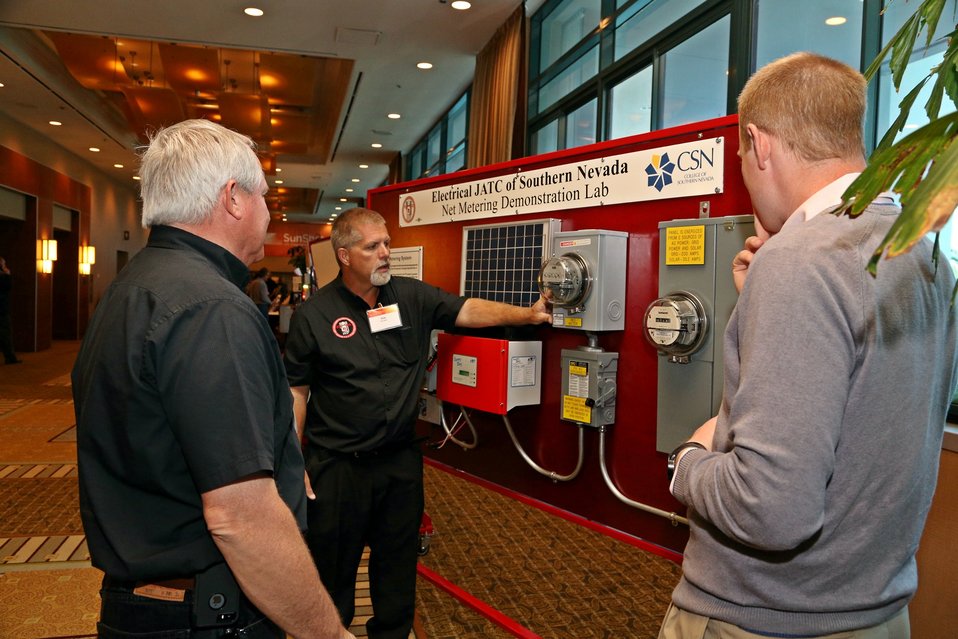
Tech Forum 29

Electrical JATC of Southern Nevada demonstrating net metering technology.